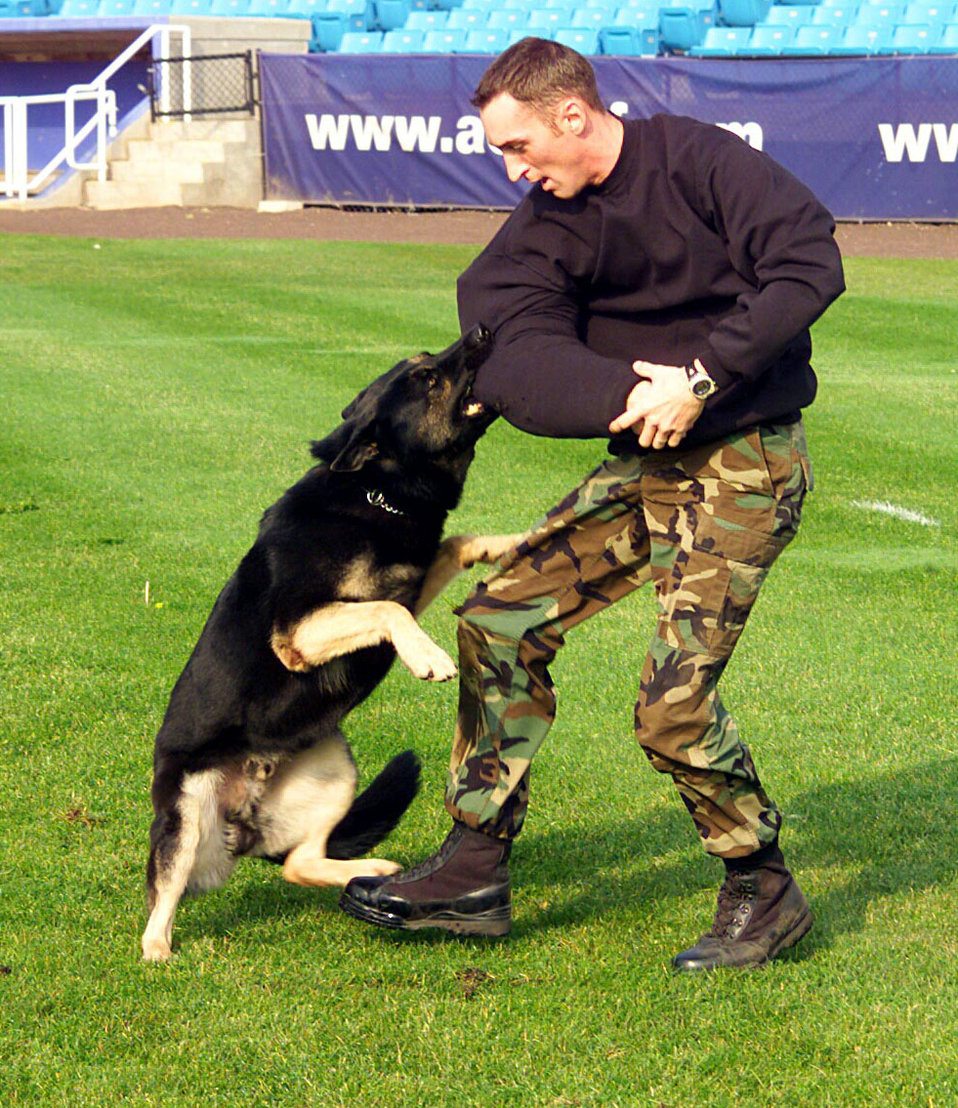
Attack!

ATLANTIC CITY, N.J. -- Brian, a military working dog, apprehends teammate Staff Sgt. Justin Marshall during the criminal apprehension event at the U.S. Police Canine National Field Trials here. The team, which also included Brian's handler, Staff Sgt. Jeremiah Jessen, scored a 333 out of 340 points in the event, finishing in fourth place out of 127 teams. The team is part of the 28th Security Forces Squadron military working dog section at Ellsworth Air Force Base, S.D.